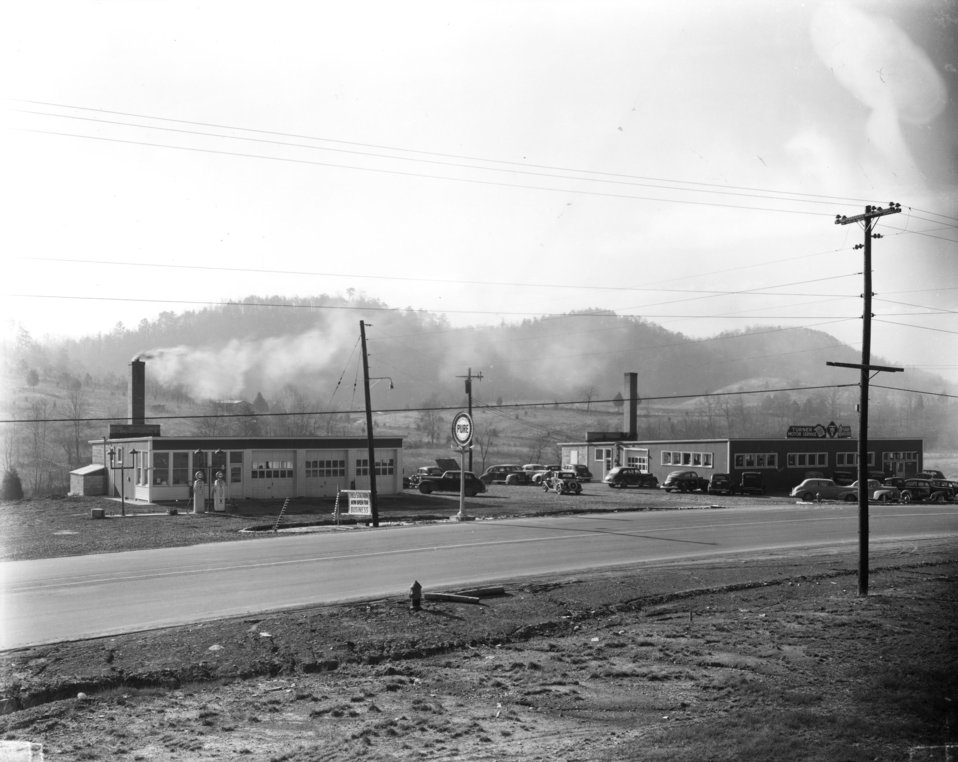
Business activity at Oak Ridge